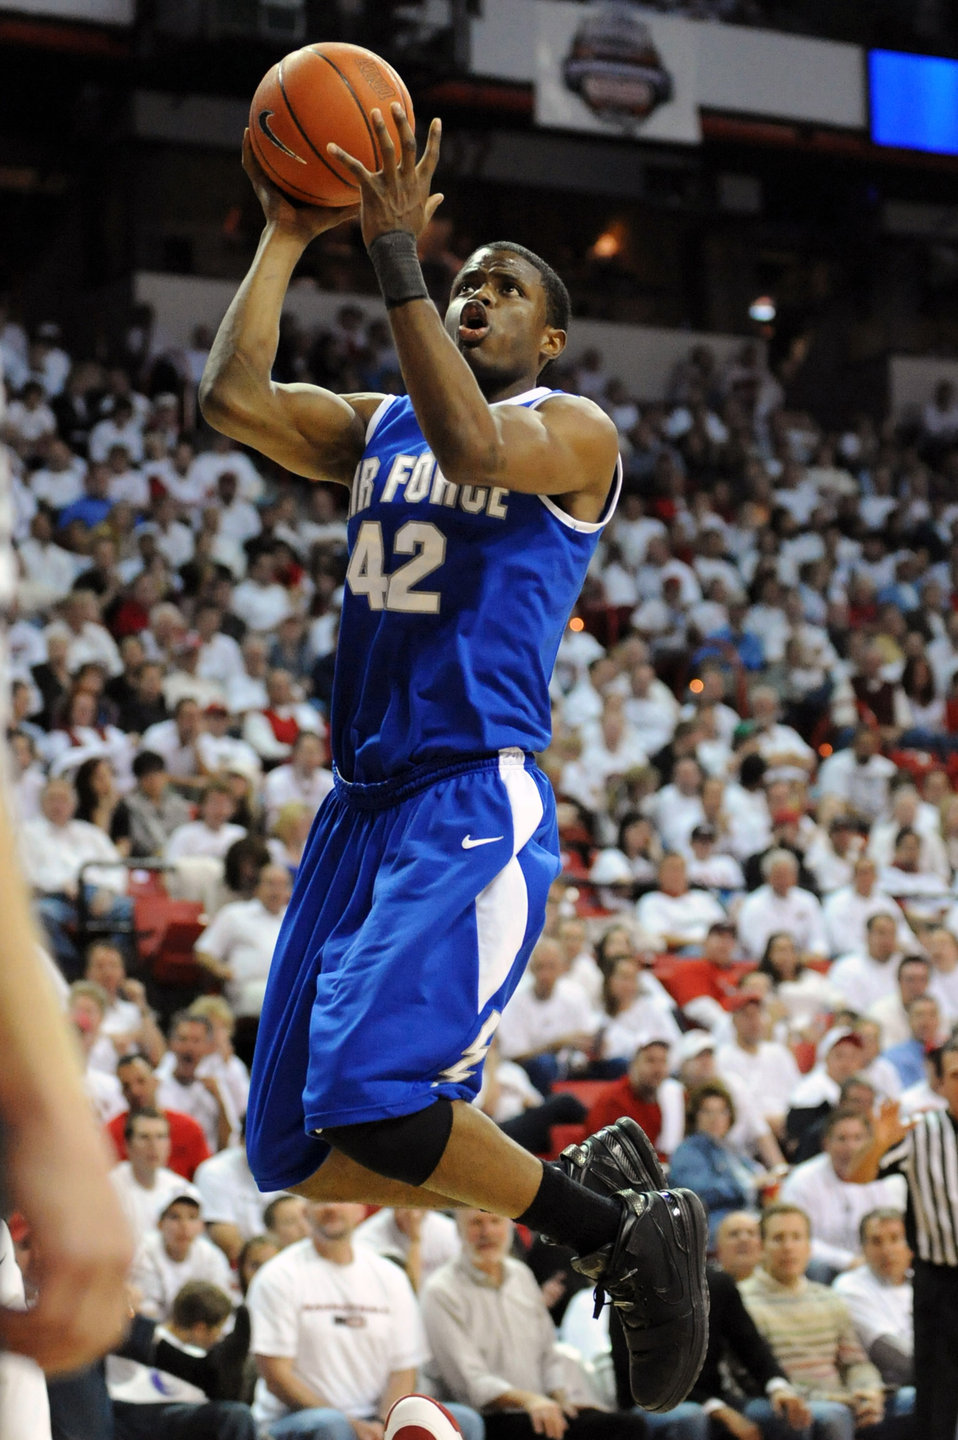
Take the shot!

U.S. Air Force Academy Falcon guard Anwar Johnson attempts a shot March 4 during the match-up between the Falcons and the University of Nevada Las Vegas Rebels at the Thomas and Mack Center in Las Vegas. The Rebels won the game 46-43.